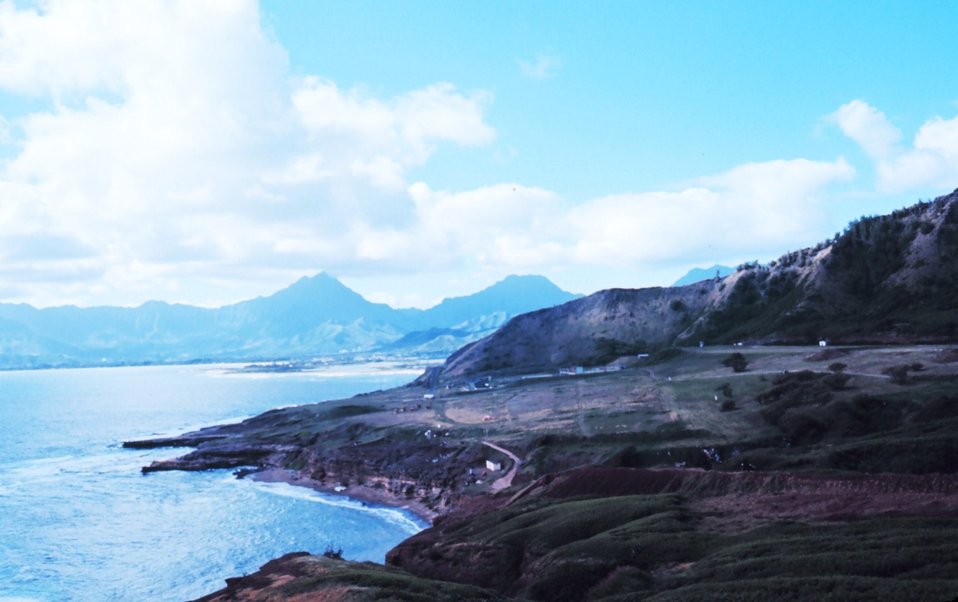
Hawaiian island coastline